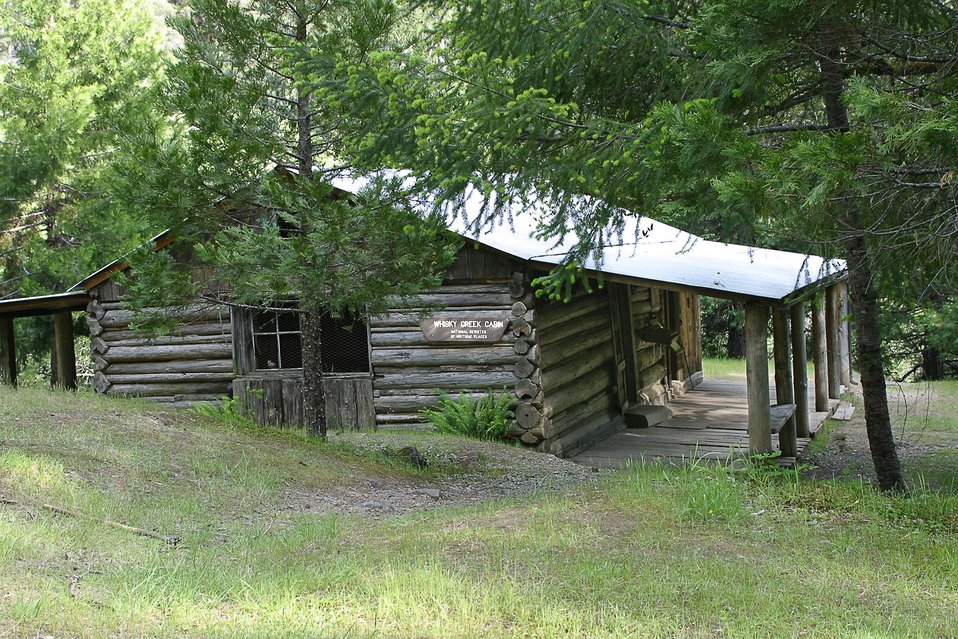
Whisky Creek Cabin along the Wild section of the Rogue River from Grave Creek to Foster Bar. 3100 cfs at Grants Pass and 5300 at Agness.